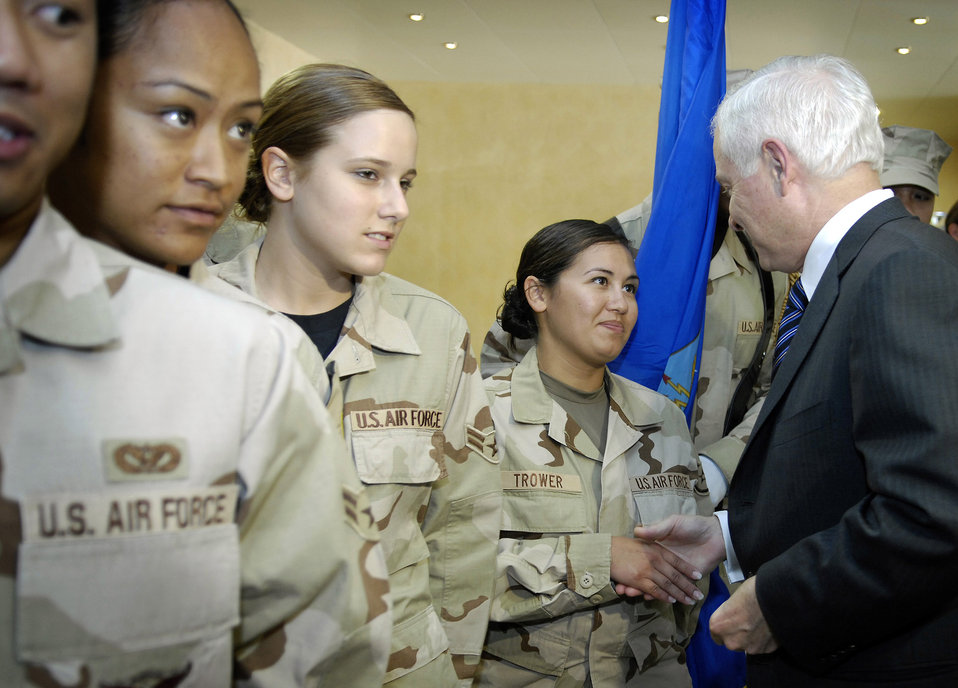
The boss drops in for a visit

Secretary of Defense Robert M. Gates shakes hands with Airmen at a forward operating location in Southwest Asia Aug. 2. Secretary Gates described his four-day trip as